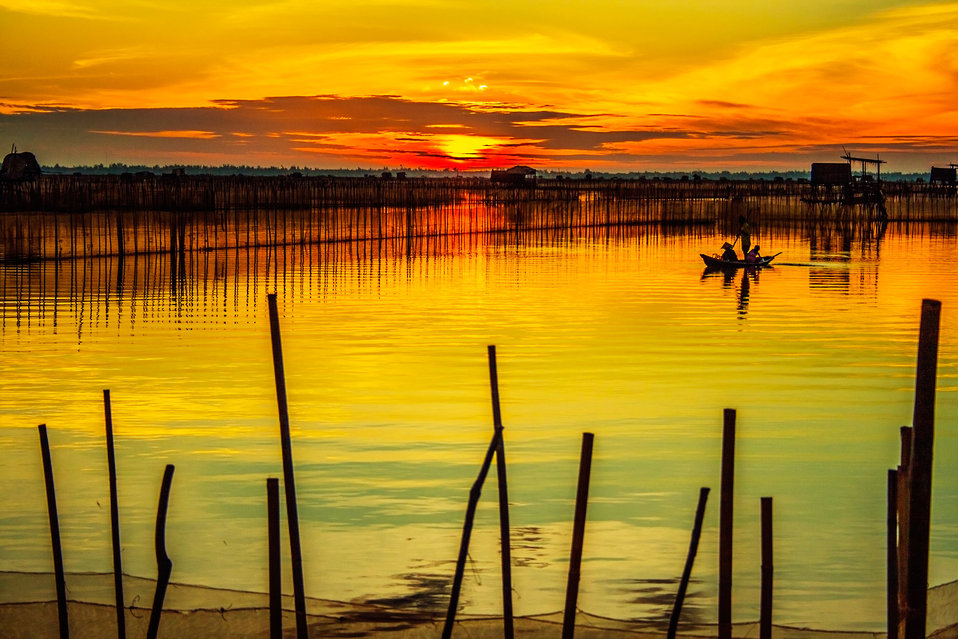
Dawn in lagoon

Dawn in the lagoon, hue province, vietnam..